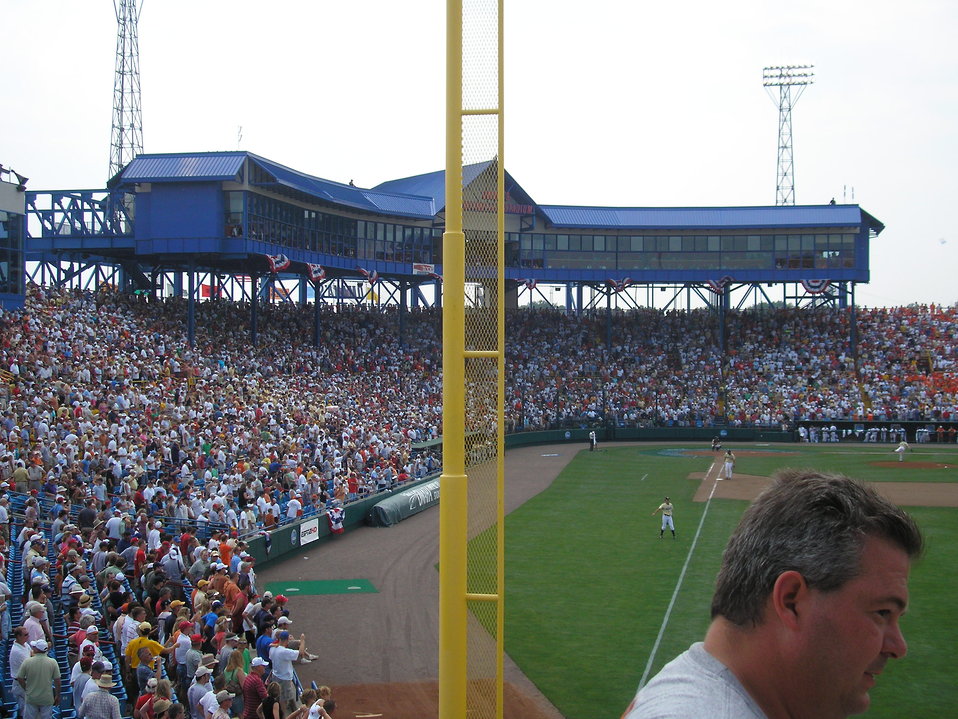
Johnny Rosenblatt Stadium
23:44, 28 November 2006 . . Skinzfan23 . . 2816×2112 (1.08 MB)